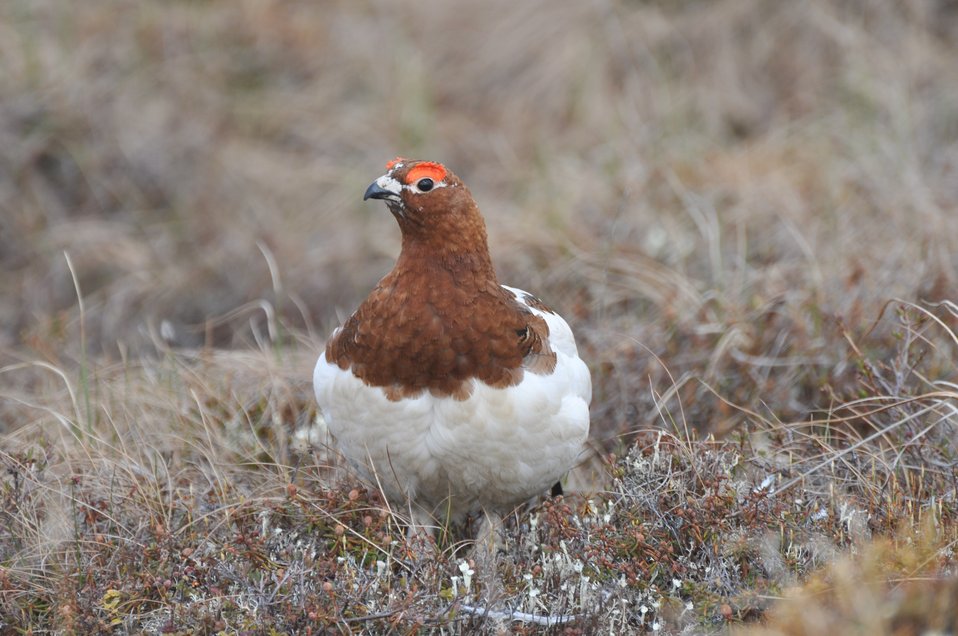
Willow Ptarmigan male

Andreafsky wilderness, Yukon Delta National Wildlife Refuge